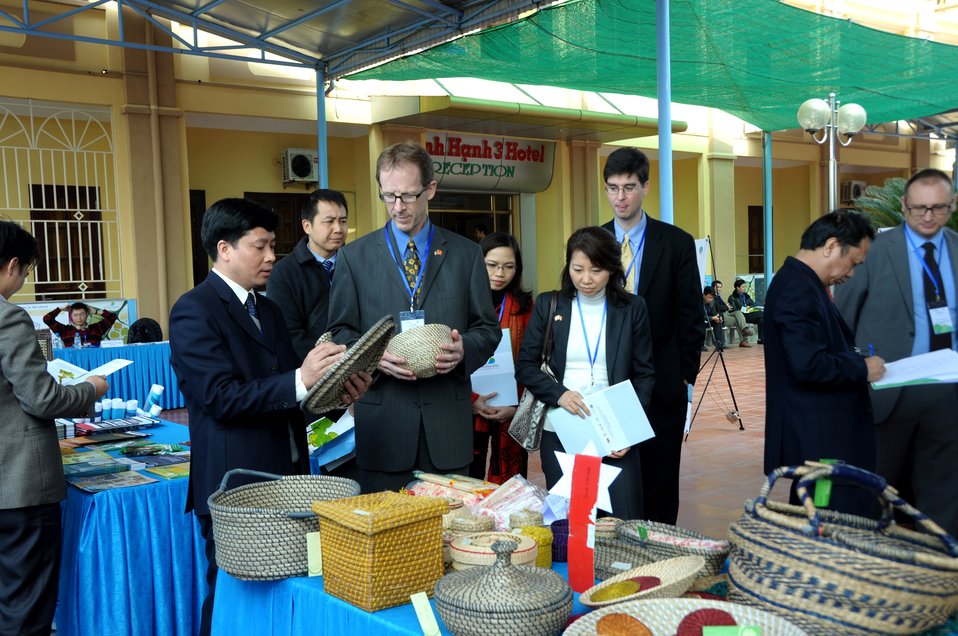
USAID launches the Vietnam Forests and Deltas project in Nam Dinh province.

Quat Lam, Nam Dinh. January 16, 2014.